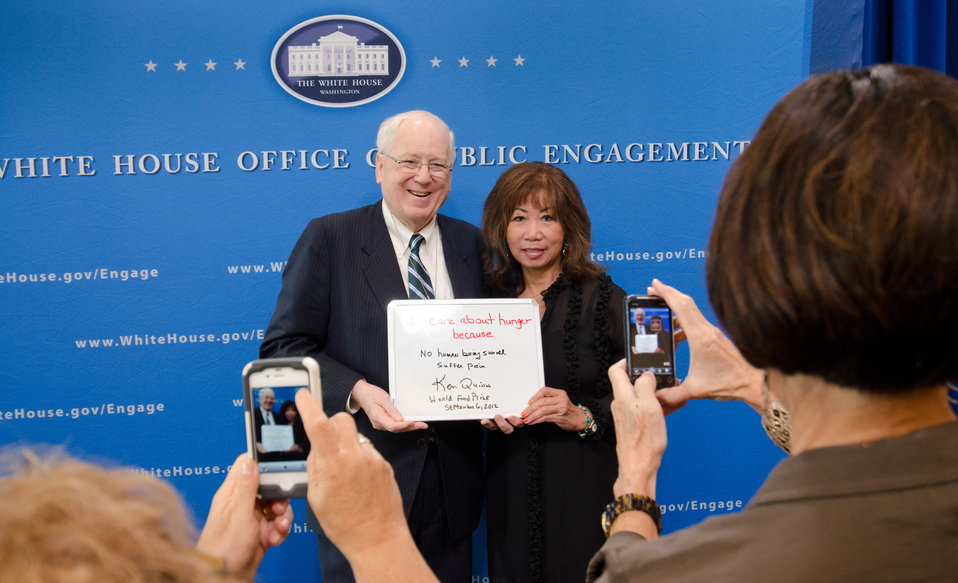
Former U.S. Ambassador to Cambodia and President of the World Food Prize Foundation Kenneth Quinn and wife Le Son, hold up a I care about hunger because... board, during an event recognizing his efforts to reduce hunger and increase food security in the U.S. and internationally at the White House Champions of Change Strengthening Food Security at Home and Abroad Event held at the White House on Thursday, September 6, 2012, in Washington, D.C.